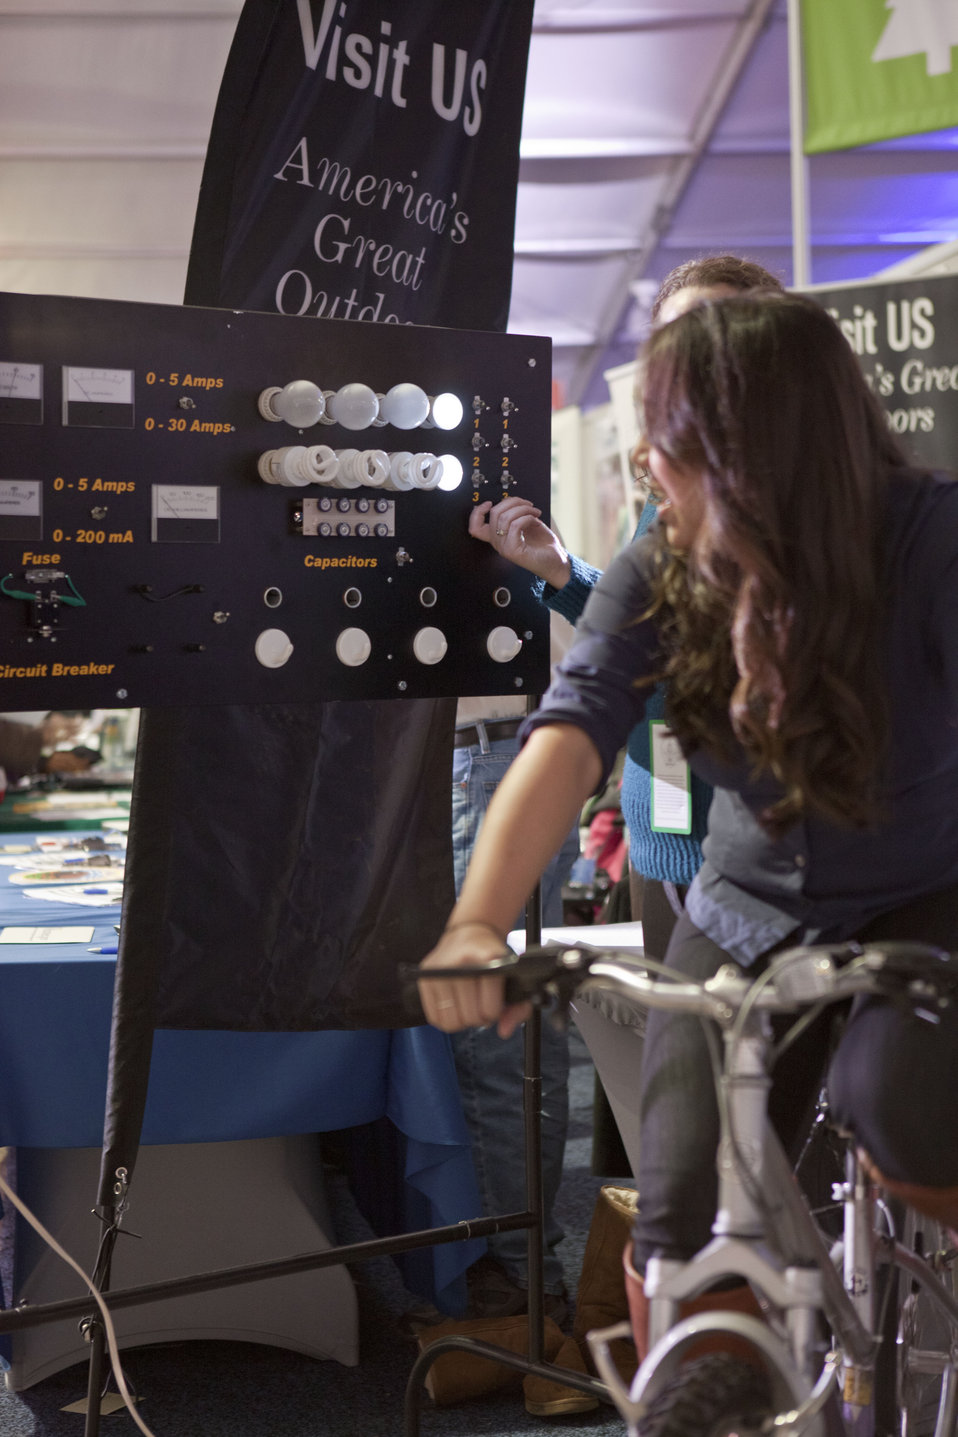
What's your #energypledge?